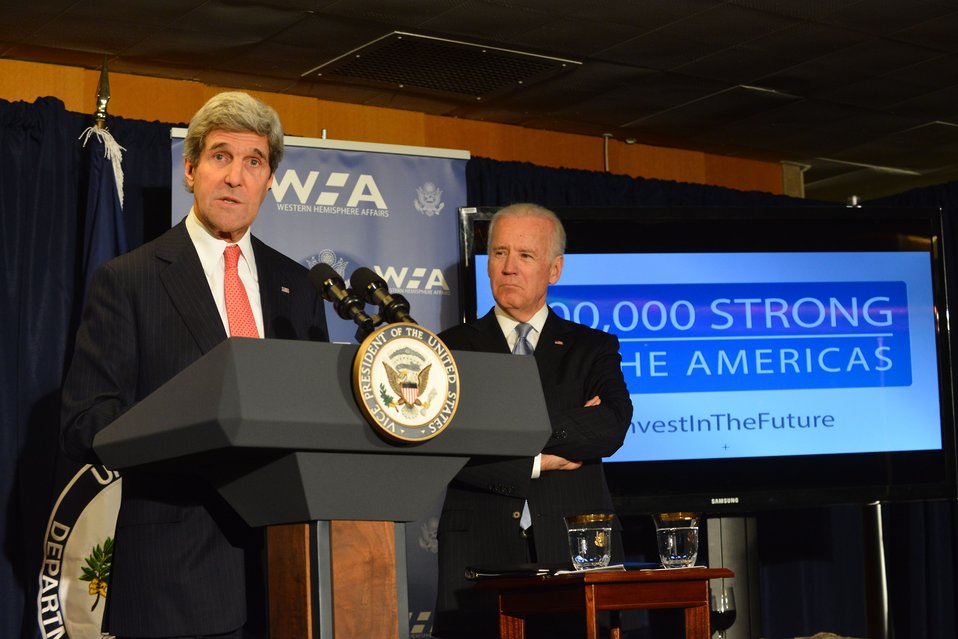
Secretary Kerry Delivers Remarks at the Launch of the 100,000 Strong in the Americas Partnership

With Vice President Joe Biden looking on, U.S. Secretary of State John Kerry delivers remarks at the launch of the 100,000 Strong in the Americas Partnership at the U.S. Department of State in Washington, D.C., on January 17, 2014.